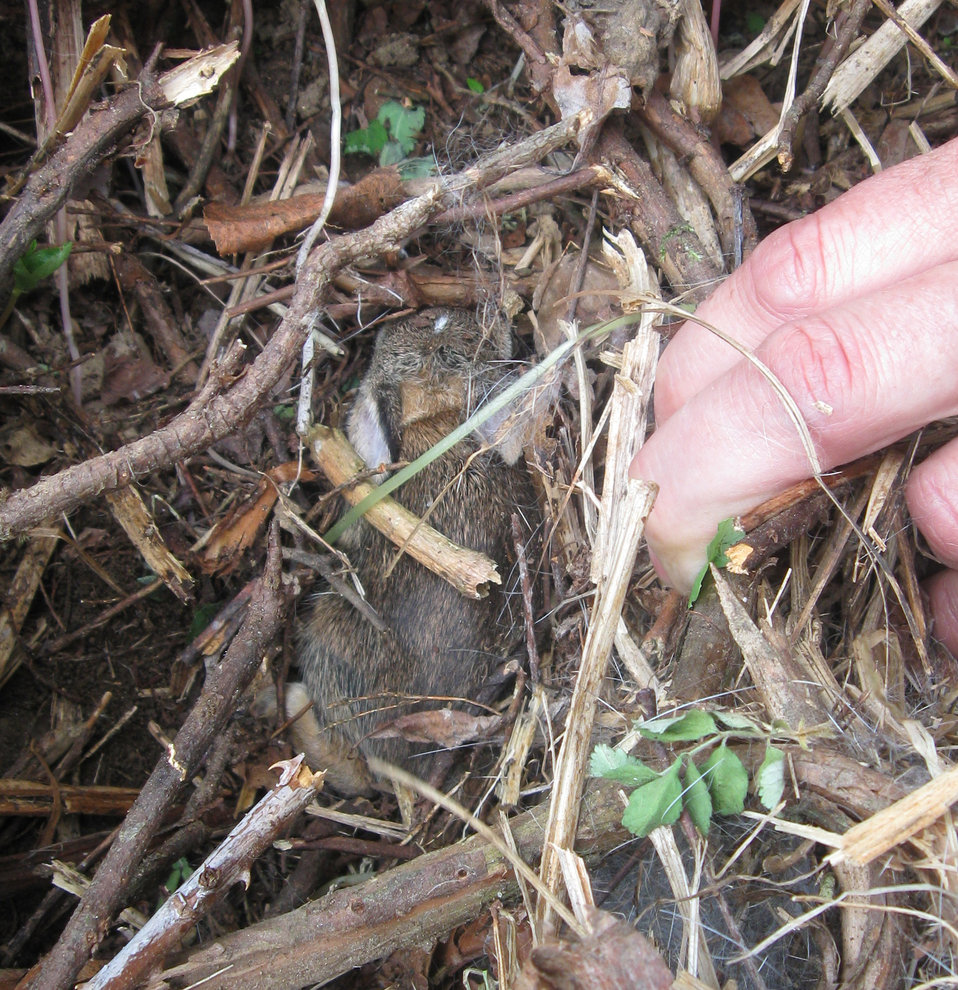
Photo of the week - Juvenile eastern cottontail in nest (MA)

Photo of the Week - 05/19/11

Eastern cottontail baby rabbit in nest.